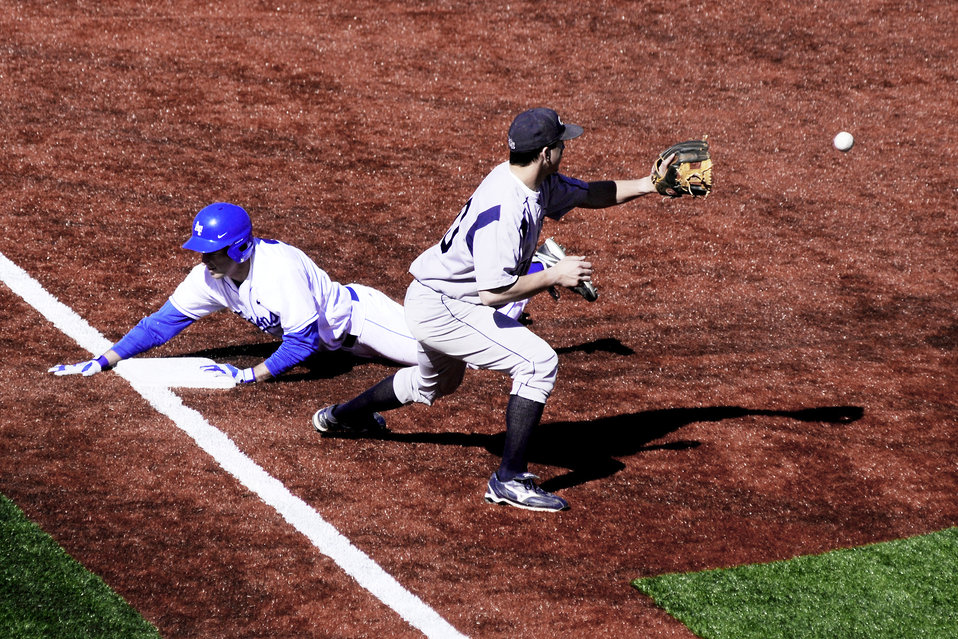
Falcons defeat Colorado School of Mines

Falcon senior Addison Gentry slides successfully into third base during play against Colorado School of Mines March 16, 2010, at the U.S. Air Force Academy's Falcon Field in Colorado. Gentry went 2-to-4 on the day with three RBIs in the 12-10 victory